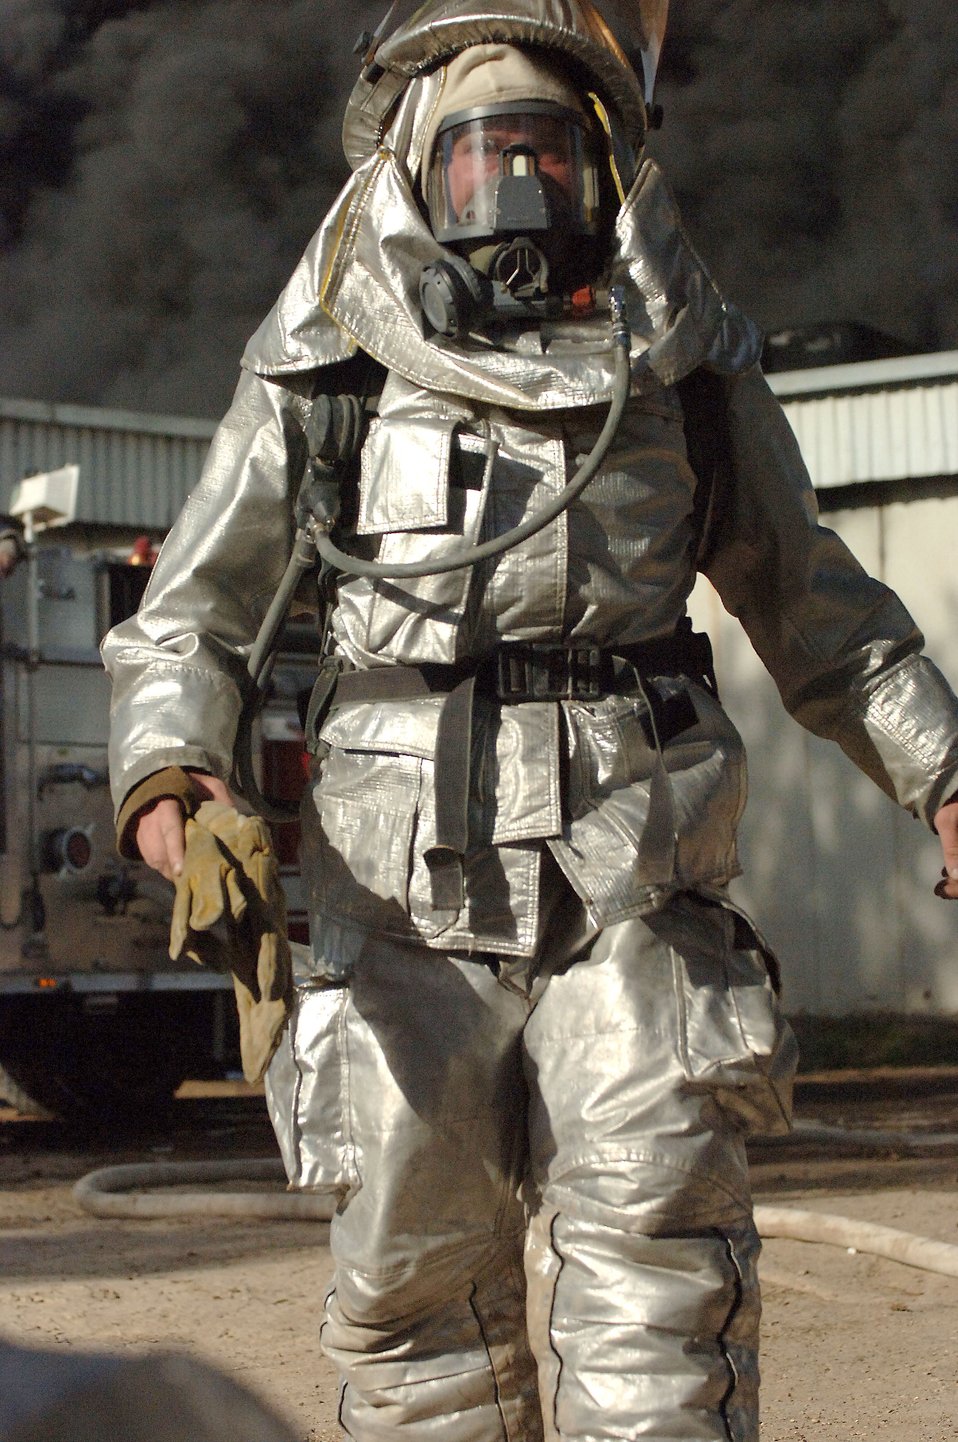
Five-alarm blaze

A firefighter from the 447th Expeditionary Civil Engineer Squadron fire department prepares to battle a fire at a weapons training facility March 11, 2006, at Victory Base Complex, Iraq. Iraqi and American firefighters from five stations battled the blaze at the facility.